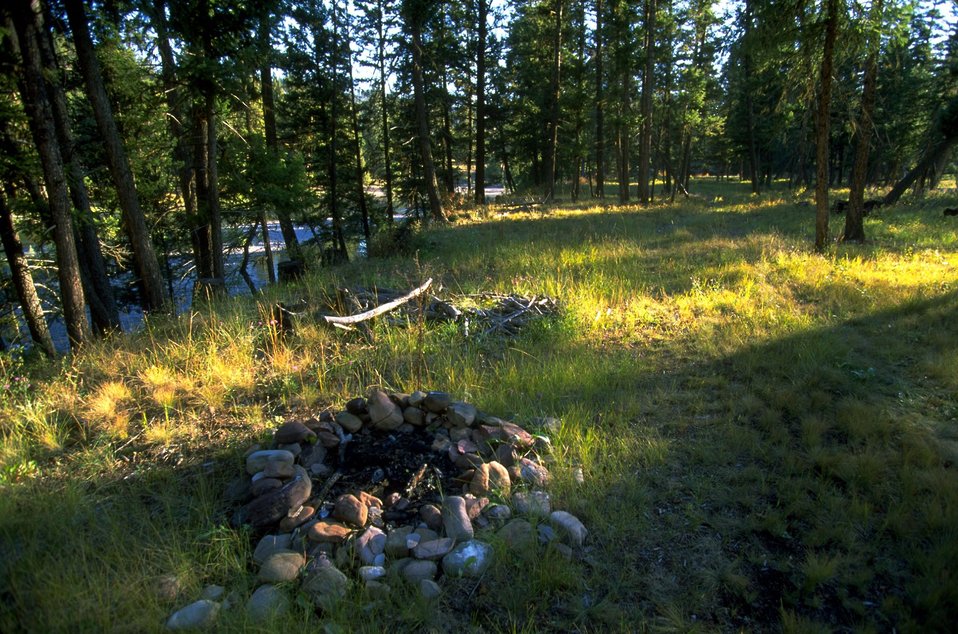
Daigles Eddy day-use area along the Blackfoot River with illegal fire ring in view